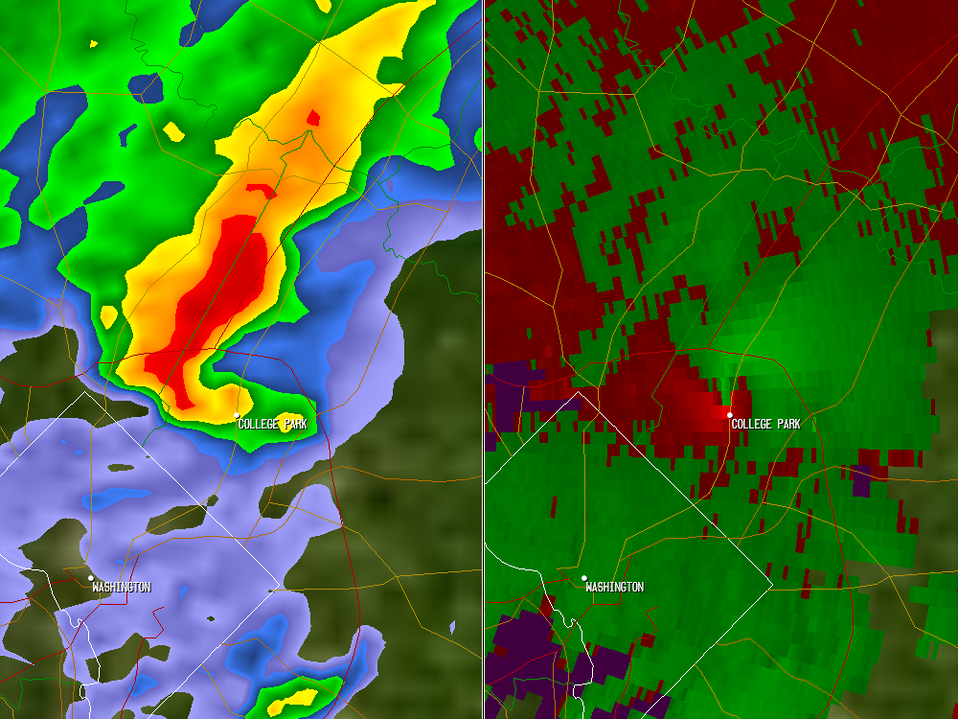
A Doppler weather radar image of an F3 tornado over College Park, Maryland on 2001-09-24. The left half of the screen is the base reflectivity image of the storm cell and the right half is the base velocity image of the storm cell. This tornado was responsible for the deaths of two people around the time of this image.